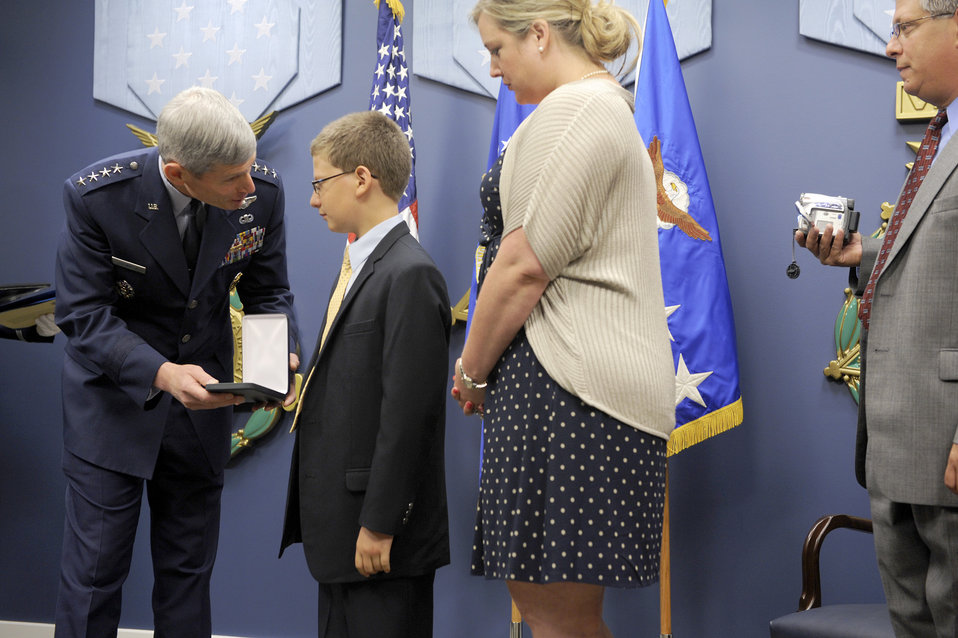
Former U-2 pilot posthumously awarded Silver Star

Air Force Chief of Staff Gen. Norton Schwartz presents the Silver Star, posthumously awarded to Capt. Francis Gary Powers, to the captain’s grandchildren, Francis Gary “Trey” Powers III and Lindsey Barry, on June 15, 2012, in the Pentagon. Captain Powers was shot down over the Soviet Union on May 1, 1960, and received the decoration for the heroism he displayed while held prisoner by the Soviets. He was released in 1962 but subsequently died in a 1977 helicopter crash.